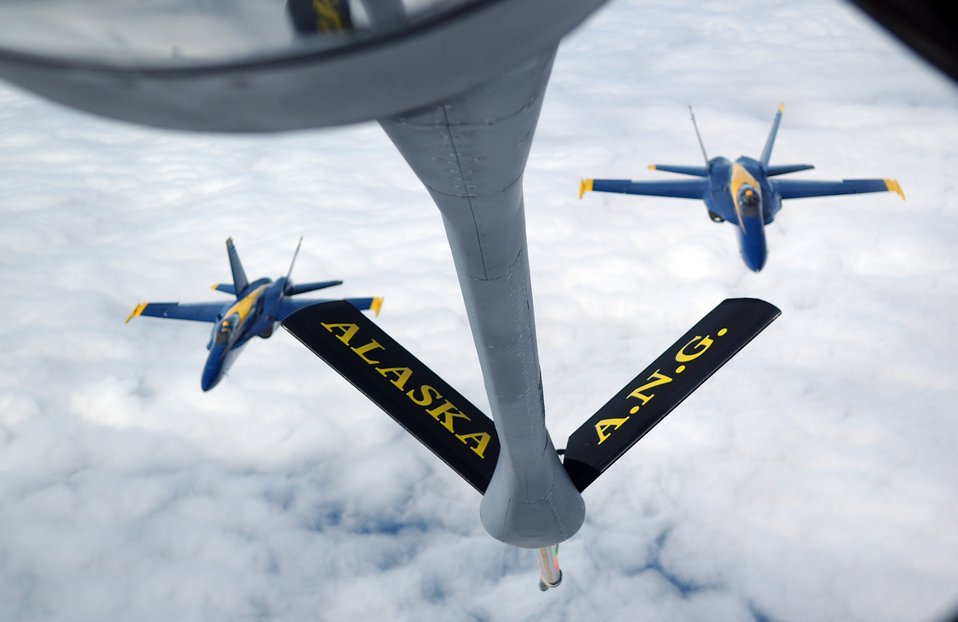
Blue Angels over Alaska

A KC-135 Stratotanker stands by to refuel a pair of F/A-18 Hornets from the Navy's Blue Angels on their way from an air show at Elmendorf Air Force Base, Alaska, on Aug. 14. The KC-135 is with the 168th Air Refueling Wing at Eielson AFB, Alaska.